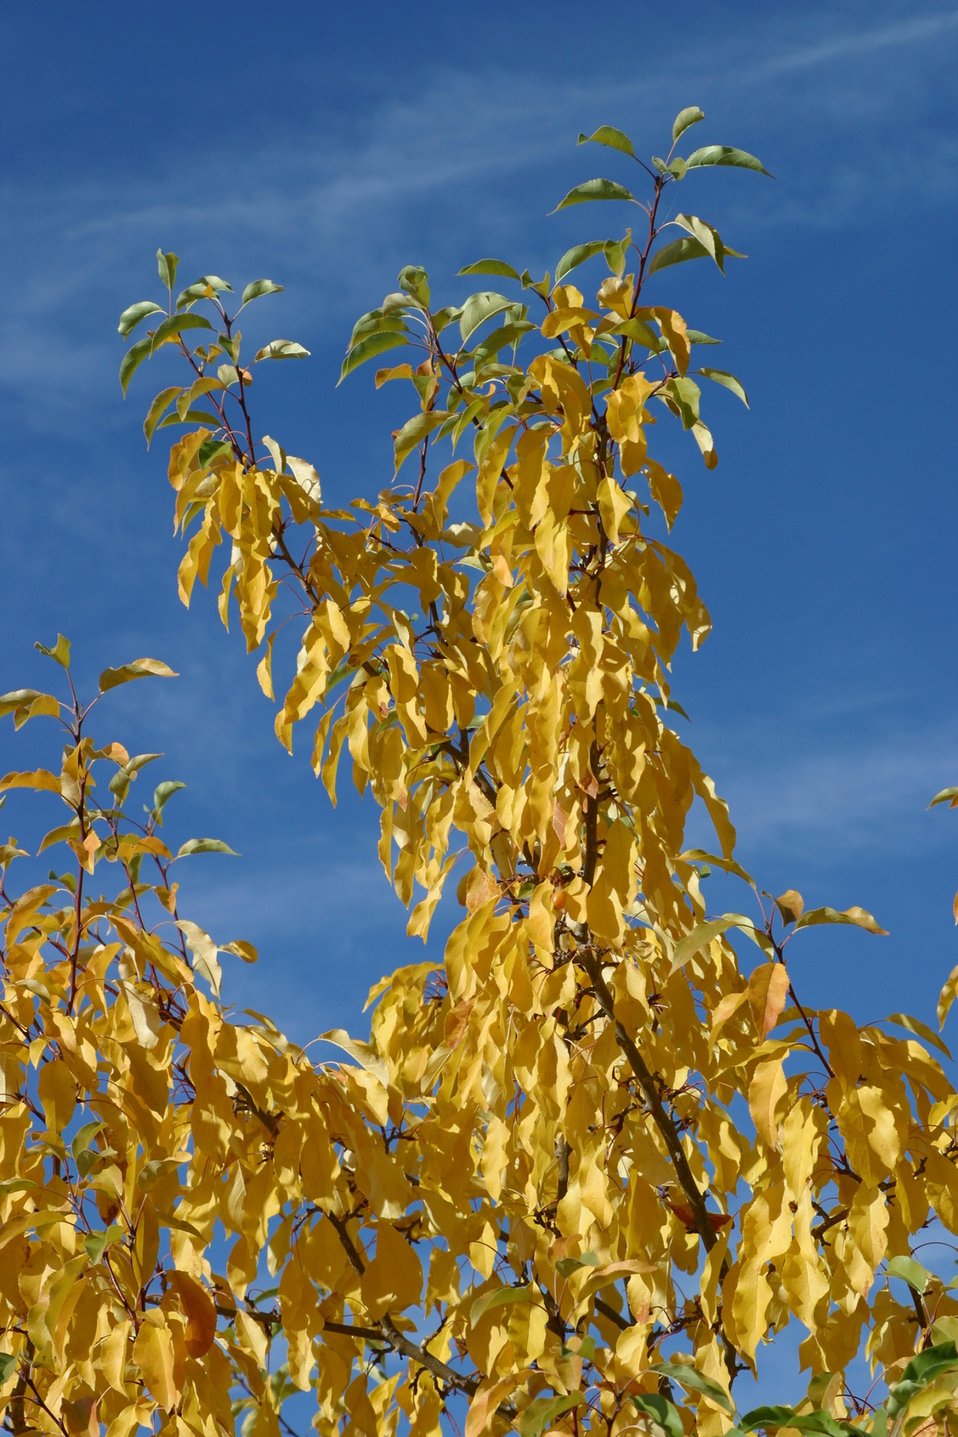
Fall colors on the Lakeview District.